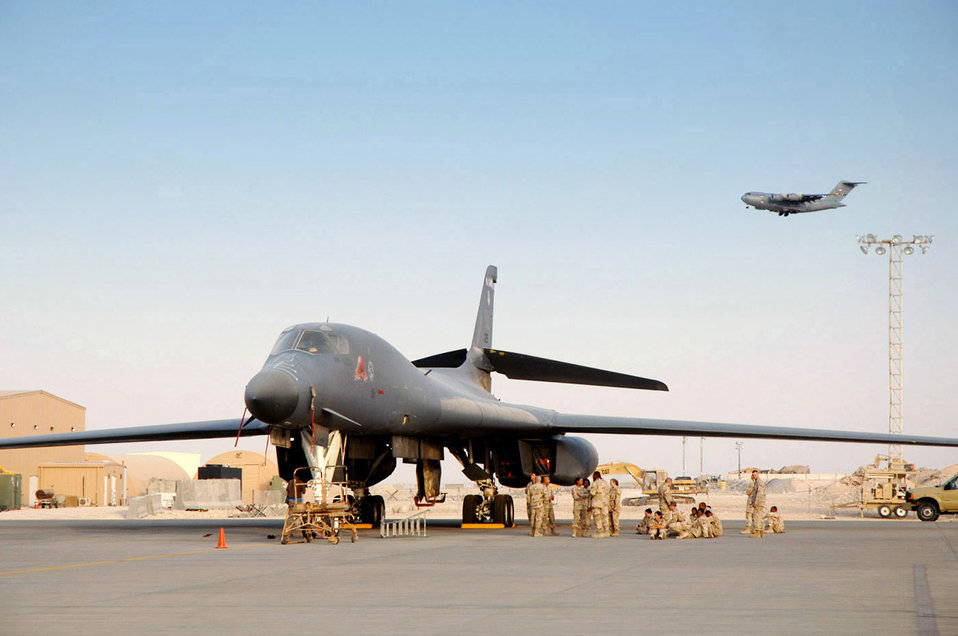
Airpower summary for Sept. 23, 2007

Maintainers ensure this B-1B Lancer is ready to go as a C-17 Globemaster III prepares to land at a forward deployed location in Southwest Asia.